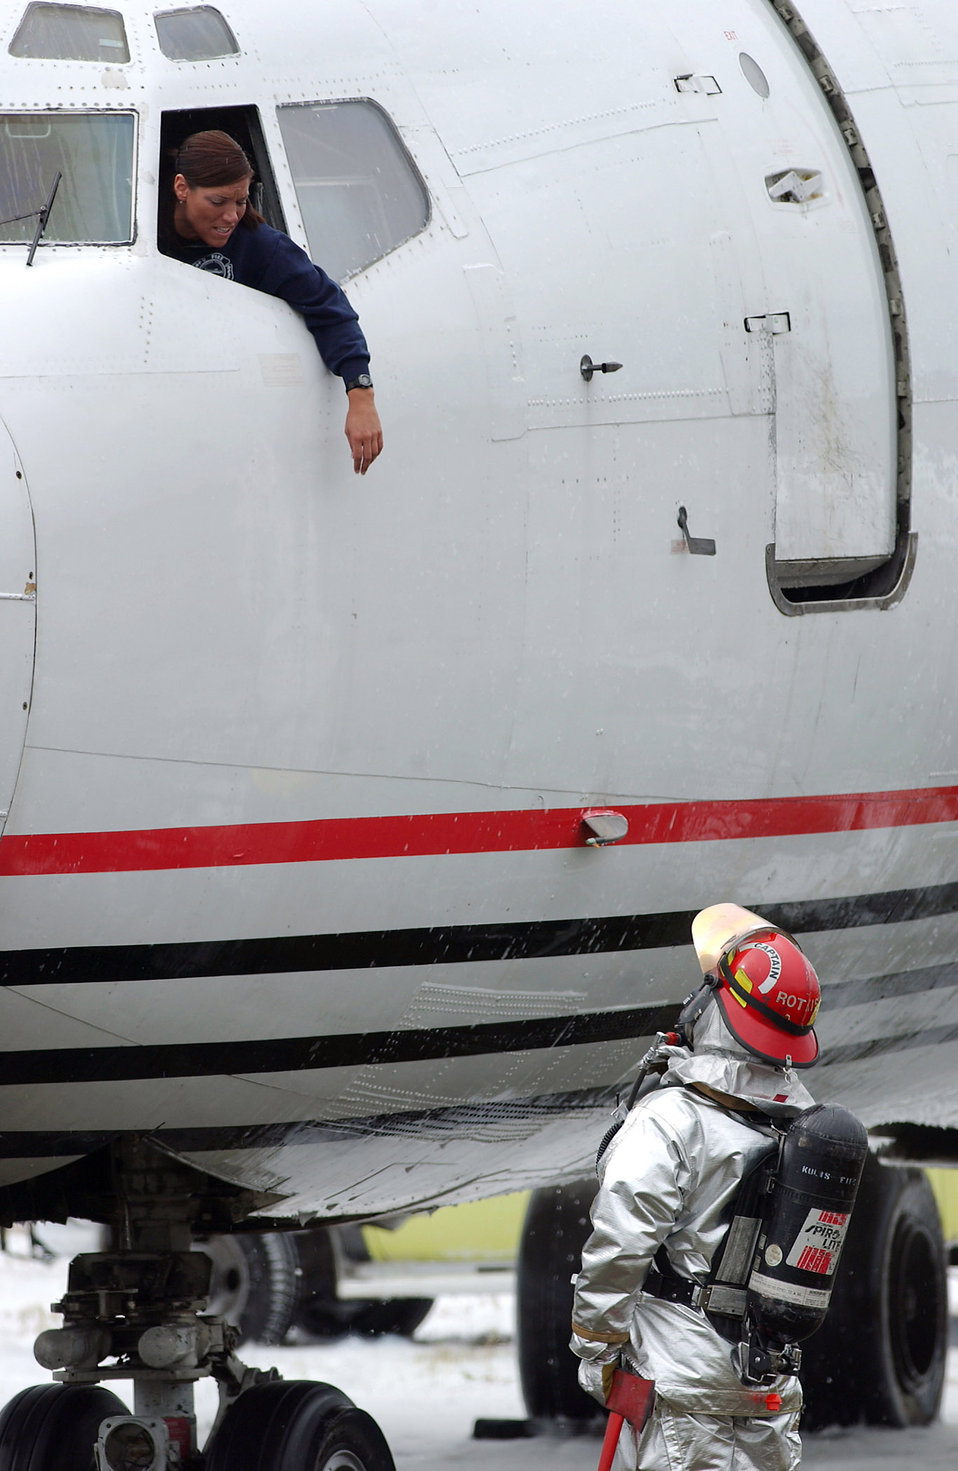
Alaska Shield/Northern Edge'05

ANCHORAGE INTERNATIONAL AIRPORT, Alaska -- Fire and rescue teams from Kulis Air National Guard Station conducted a mass casualty drill with a simulated aircraft crash Aug. 17 during Alaska Shield/Northern Edge '05. The exercise was the largest homeland defense/homeland security exercise ever conducted in Alaska. It was the first opportunity within the state to exercise an integrated local, state and federal government response to a series of simulated emergencies including natural disasters, terrorist attacks and mass casualty scenarios.